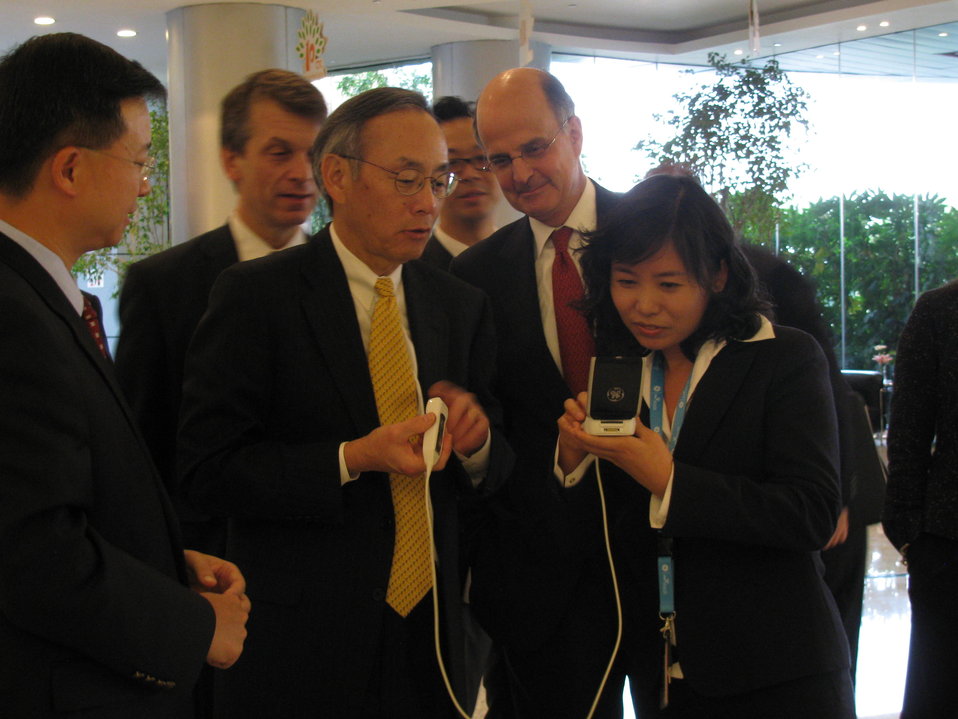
Shanghai 056